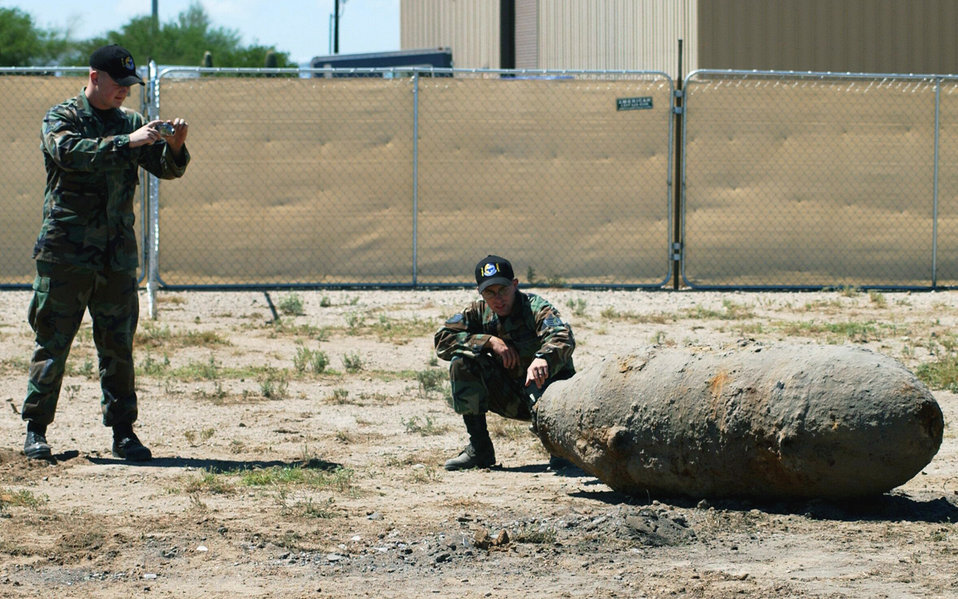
It's da bomb!

DAVIS-MONTHAN AIR FORCE BASE, Ariz. -- Airman 1st Class Andrew Lebeau (left) and Staff Sgt. Dustin Prowell check out a bomb discovered here Sept. 10. Base officials believe the bomb is left over from World War II. Sergeant Prowell is an explosive ordnance disposal journeyman, and Airman Lebeau is an EOD technician. Both are assigned to the 355th Civil Engineer Squadron.